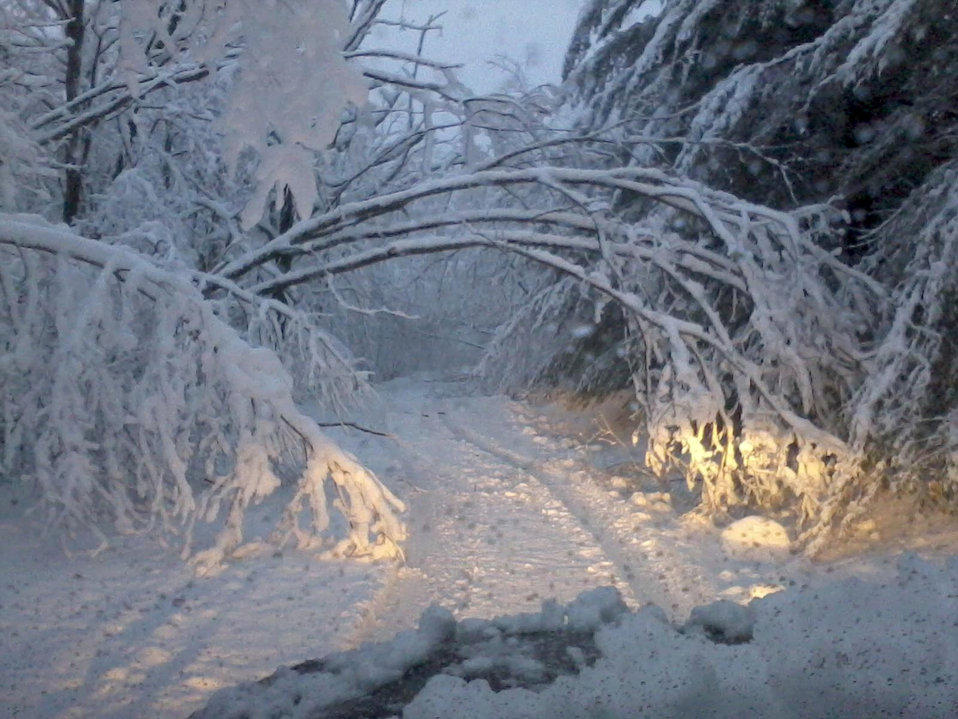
Hurricane Sandy pounds West Virginia

John Schmidt, of the West Virginia Field Office, heads out to the check the office. It took four staffers more than an hour to clear the downed trees.